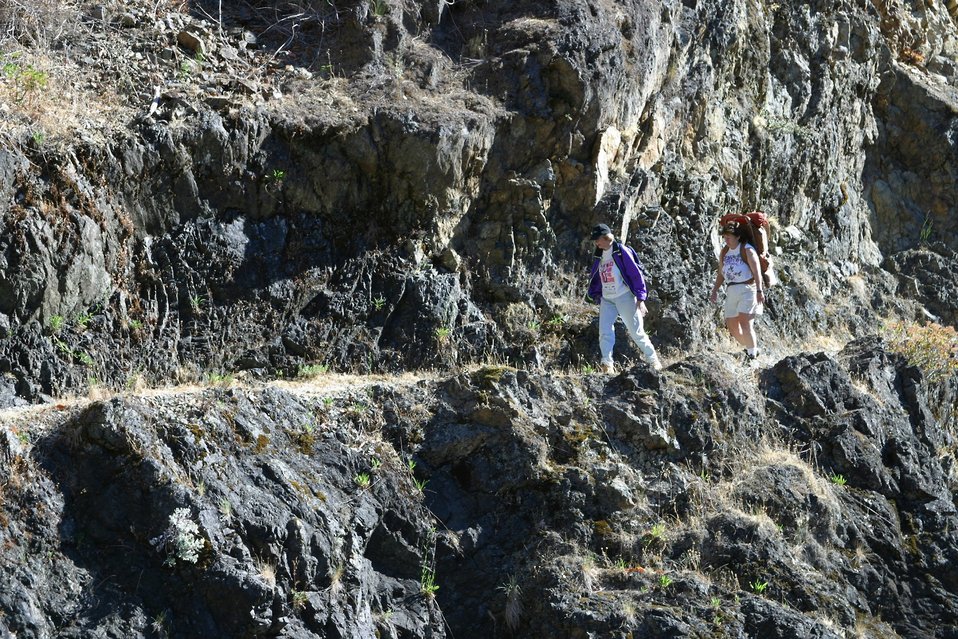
Hiking the Rogue River Trail between Mule Creek and Blossom Rapids.